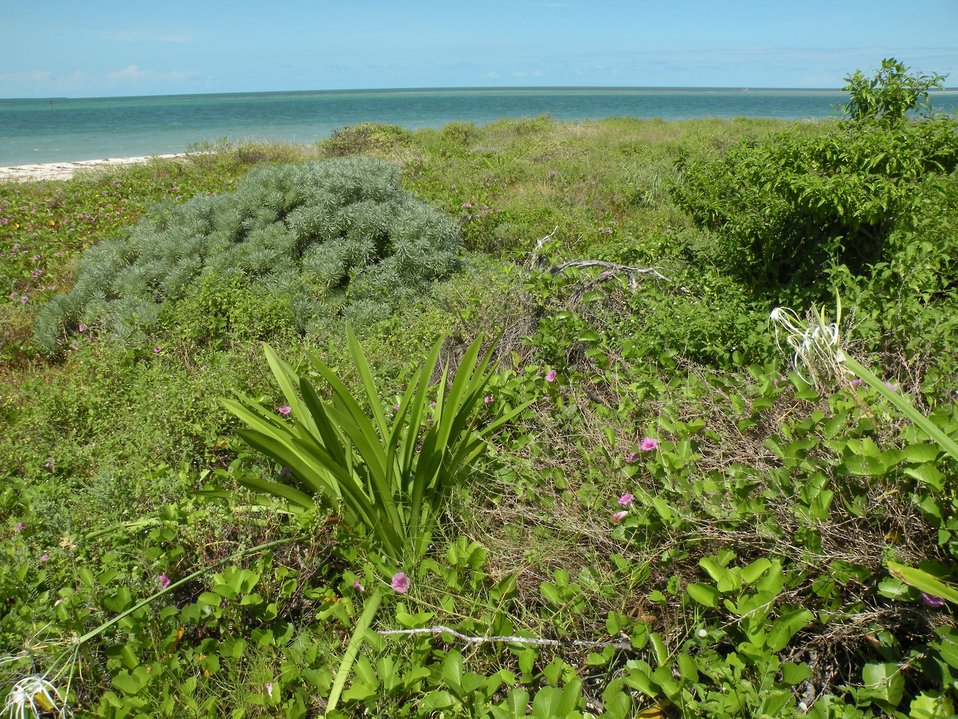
Key West NWR and native plants

Native plants grow on an island of Key West National Wildlife Refuge off the Florida coast. Plants include sea lavender (greyish/blue bush at left), ocean blue morning glory (purple/blue flowers) and beach spider lily (thick-leaved green plants in foreground with spiky white flowers).